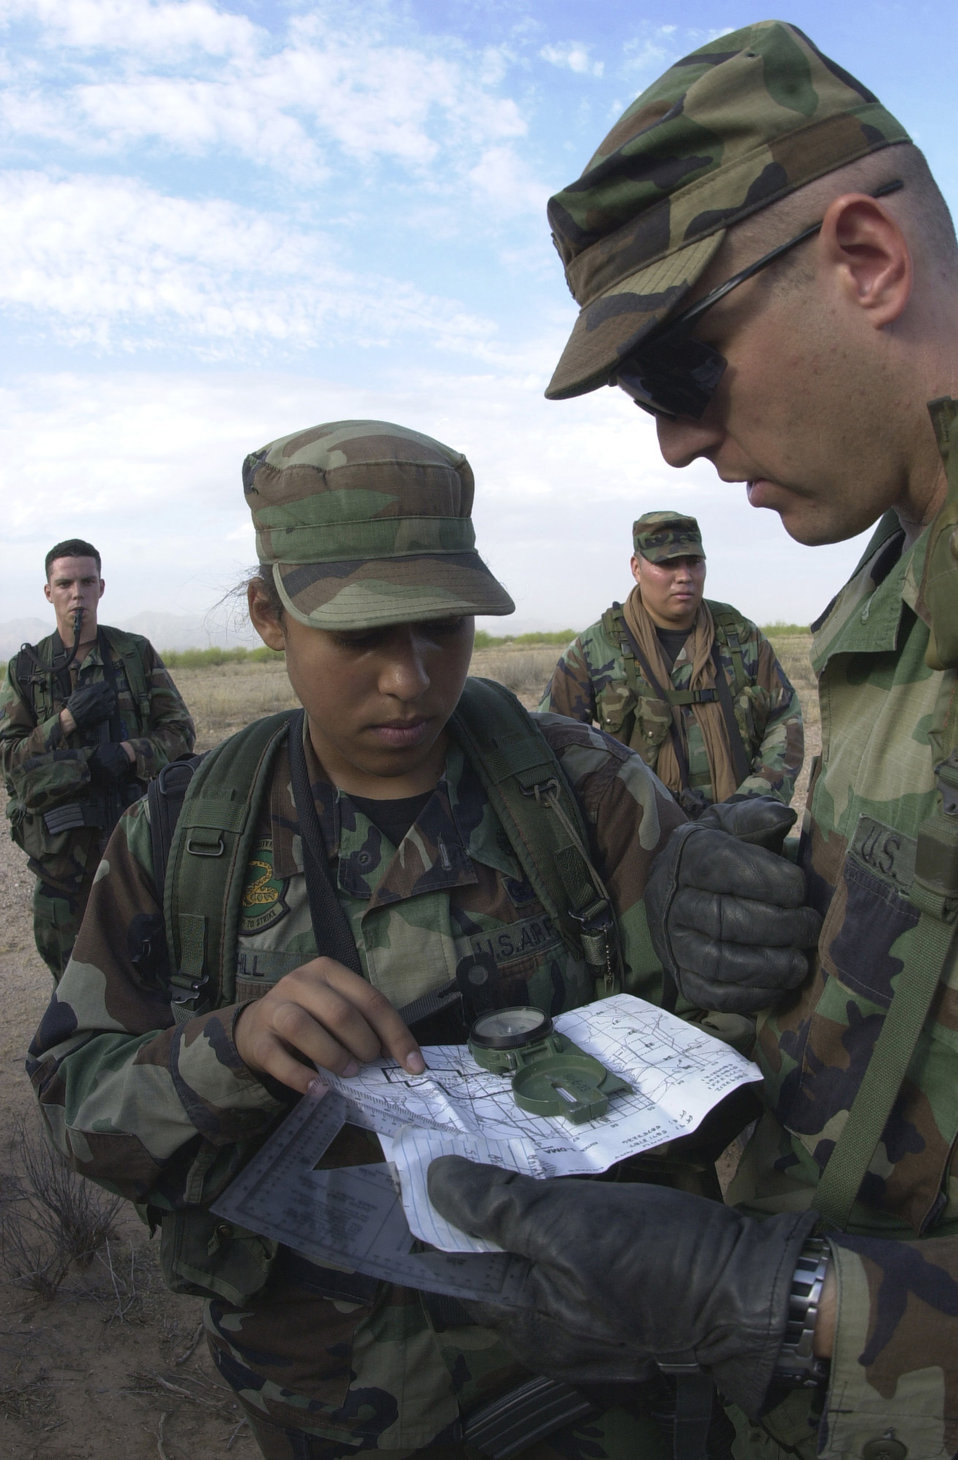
Which way do we go?

LUKE AIR FORCE BASE, Ariz. -- Sgt. 1st Class Scott Pennell, with the U.S. Army's Field Artillery Unit, discusses map and compass reading with Airman 1st Class Jeannie Hill, during land navigation training here recently. Listening in are Airman 1st Class Christopher Wright (left) and Staff Sgt. Greg Toya. All three Airmen are assigned to the 56th Security Forces Squadron.